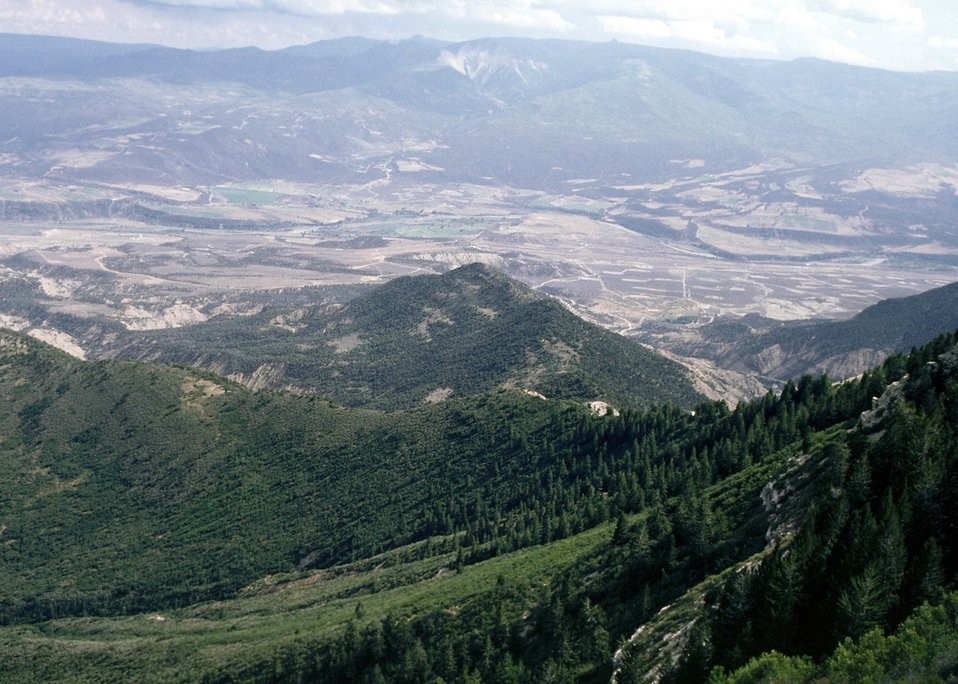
View of greenlands and mountain side.